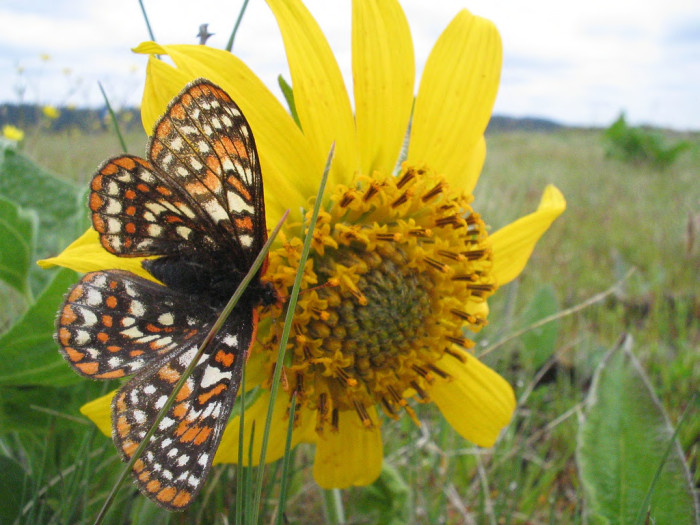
Taylor's checkerspot butterfly (candidate for endangered species listing)

Willamette Valley, OR